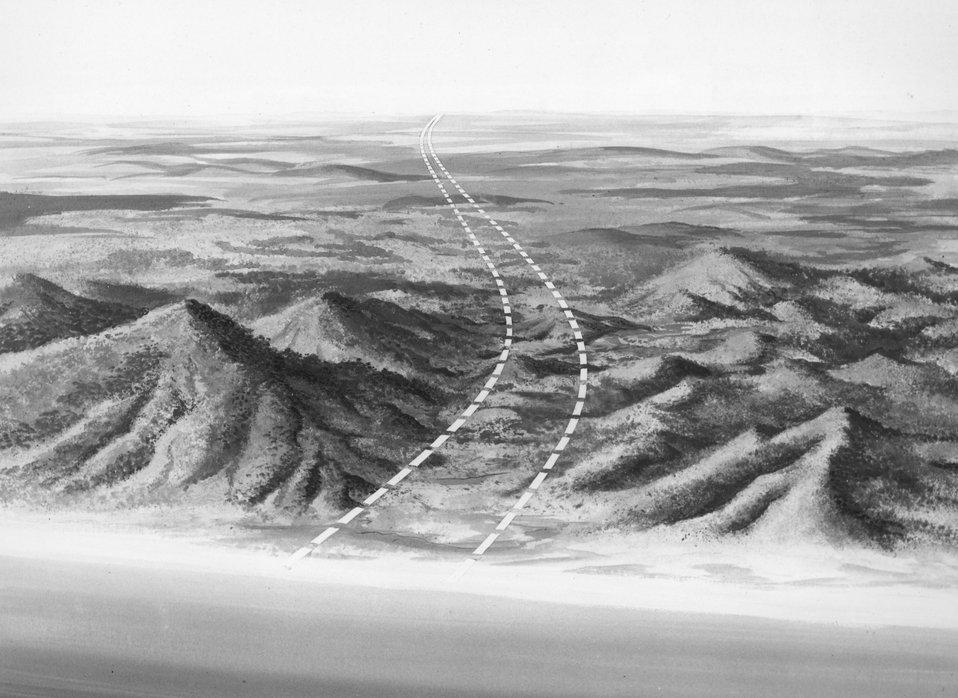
Artist's concept of a sea-level canal route. Excavation of harbors and canals is an area of investigation being conducted by the Atomic Energy Commission in its Plowshare program for the peaceful uses of nuclear explosives. c. 1966